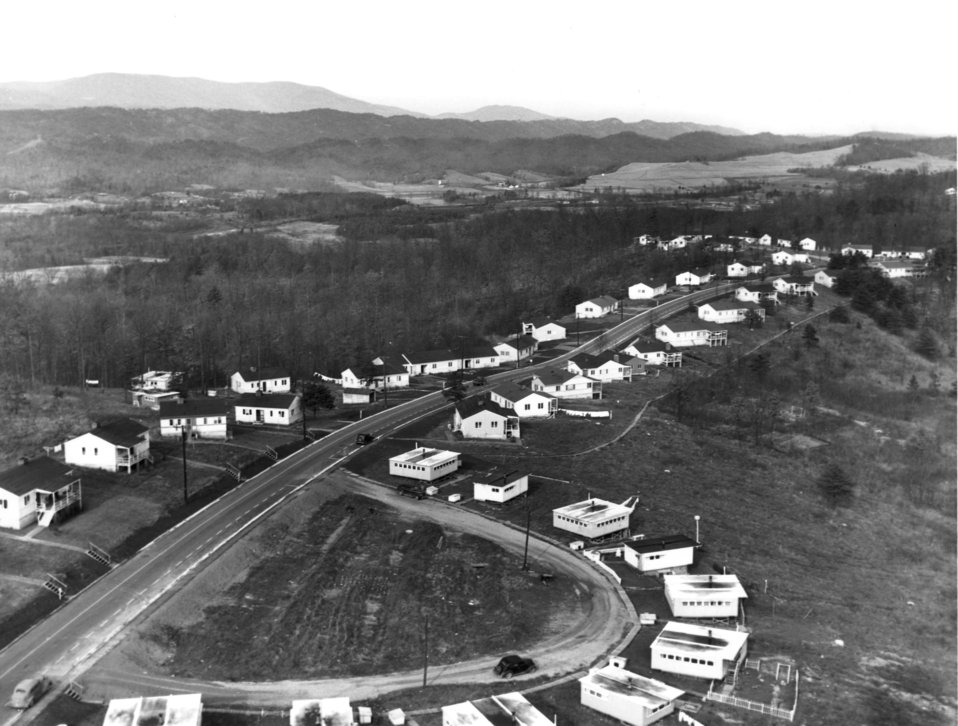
Aerial of Oak Ridge